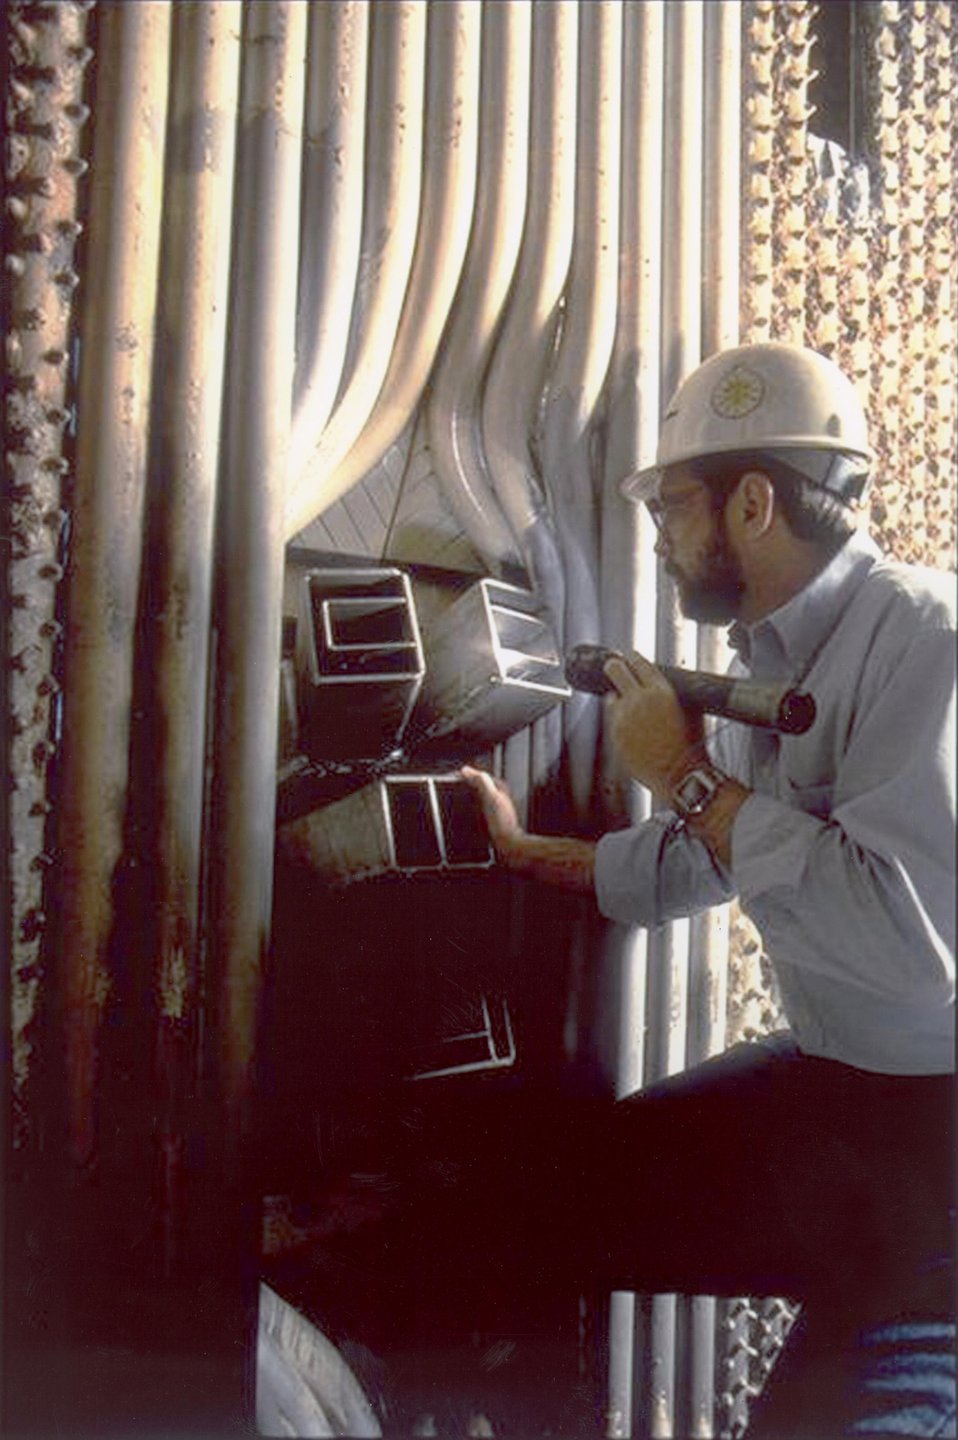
TECHNICIAN INSPECTING THE BURNER OUTLETS FROM THE INSIDE OF A BOILER.